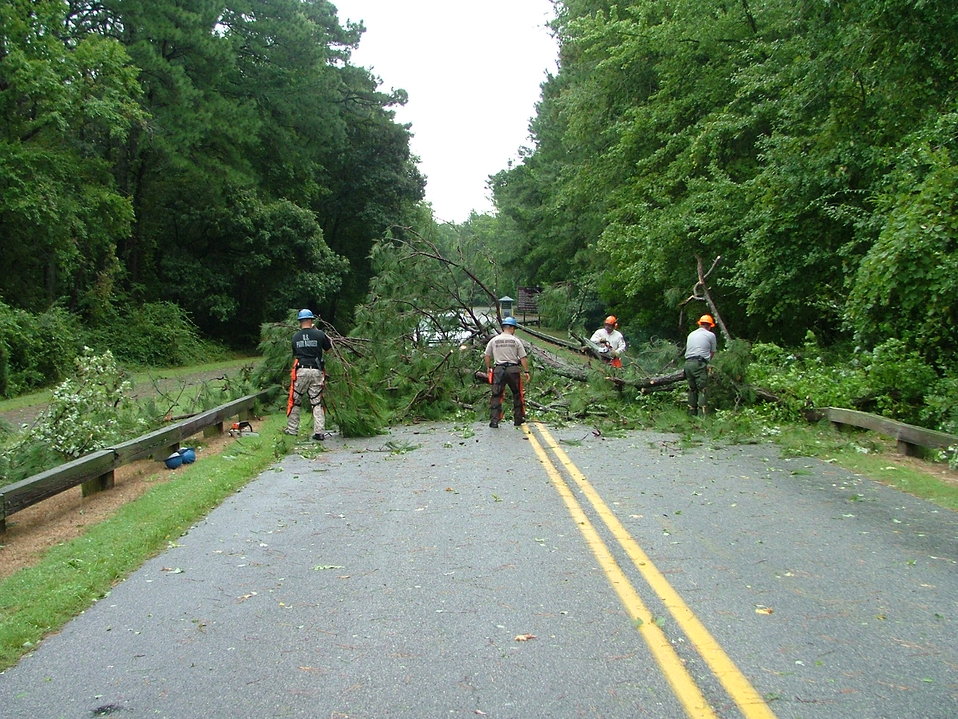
Clearing the debris

U.S. Fish and Wildlife Service & National Park Service staff clear obstruction from road and bike trail at Chincoteague National Wildlife Refuge in Virginia after Hurricane Irene.